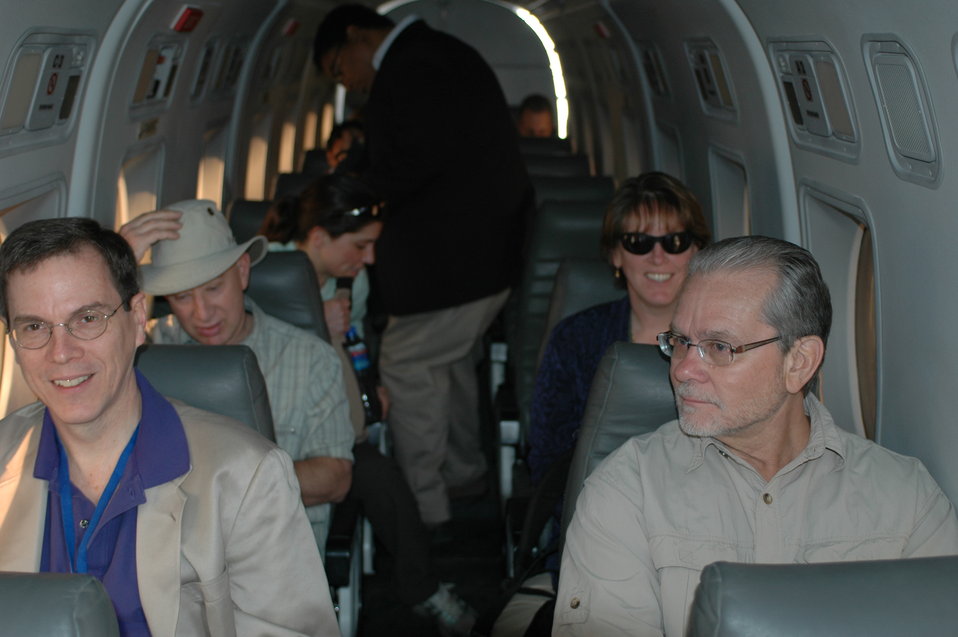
Dr Shah Visits Kandahar April 9, 2010